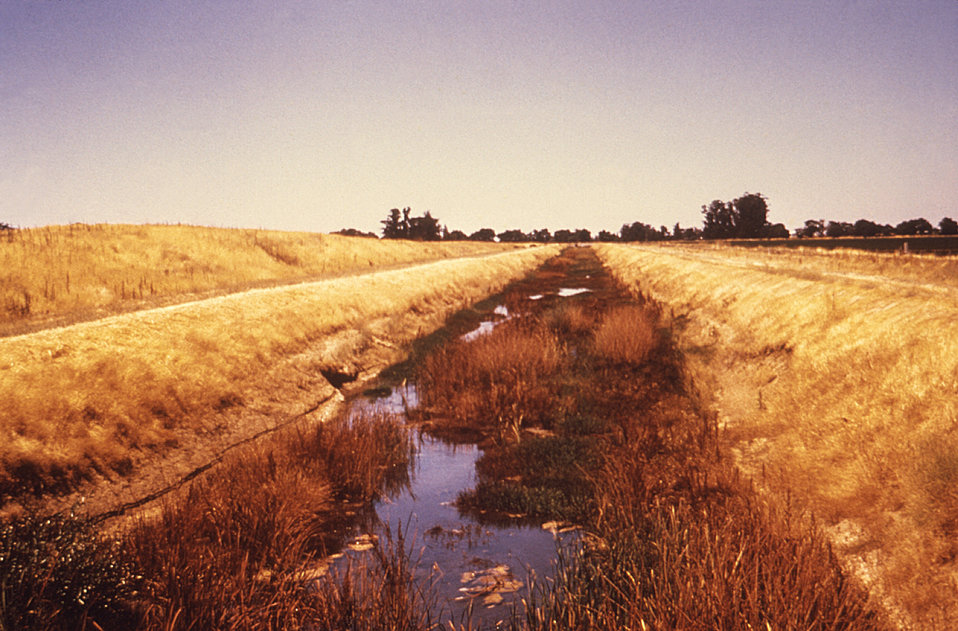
Cleaning debris and overgrown plant life from choked drainage canals like the one depicted in this image, is essential to keeping such water collections free of insect disease vectors such as mosquitoes.